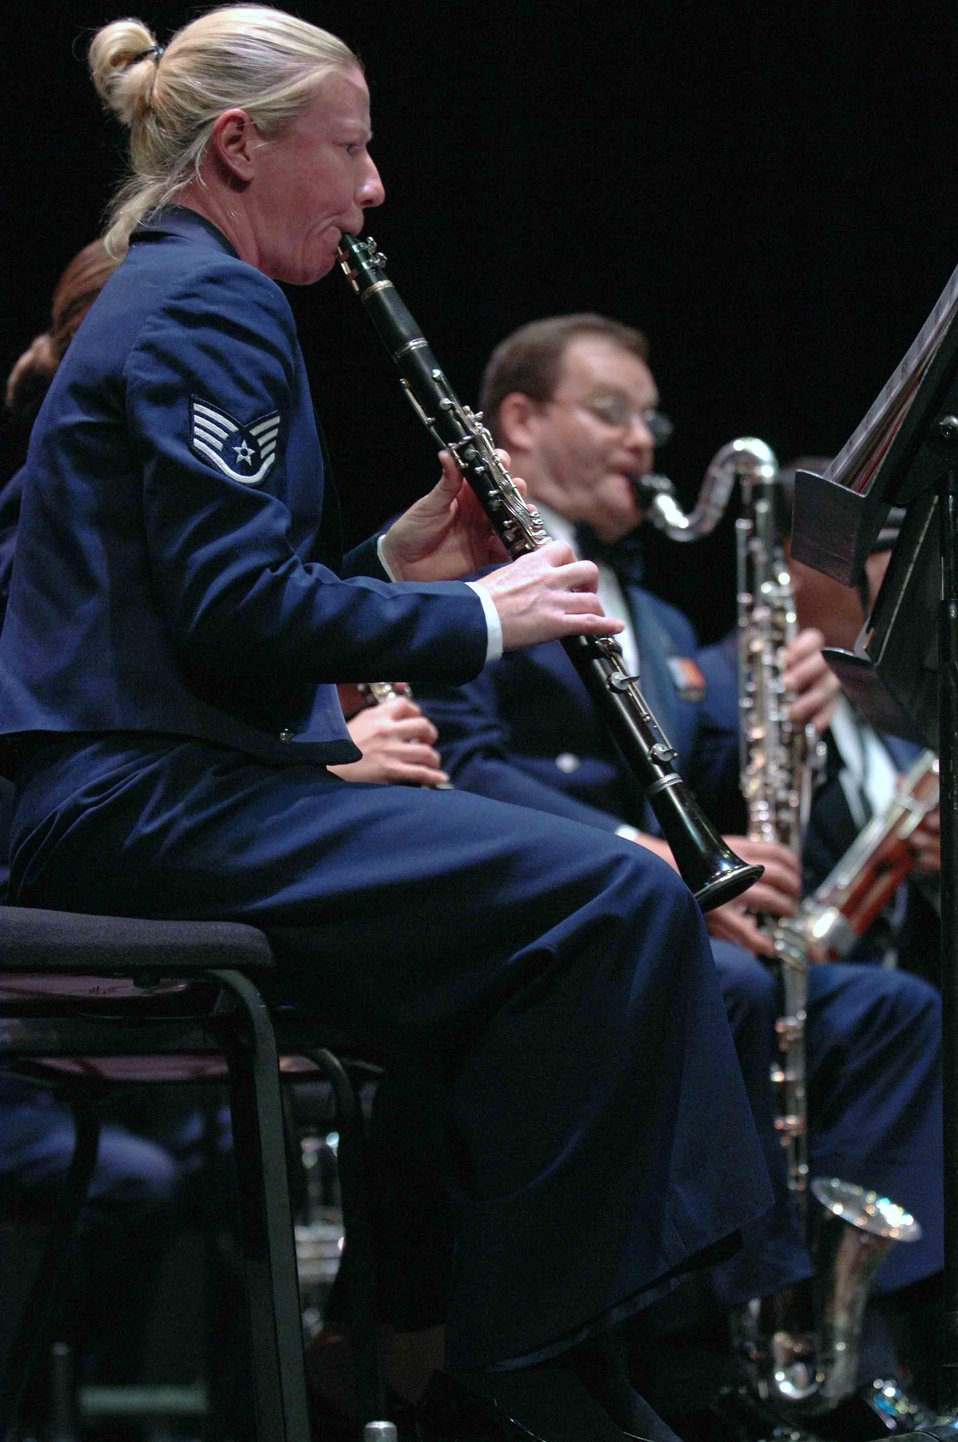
Music to their ears

Staff Sgt. Christy Bailes plays the clarinet during an Oct. 17 performance at the University of Nevada Las Vegas. Sergeant Bailes is a member of the United States Air Force Band of the Golden West. The Band of the Golden West, from Travis Air Force Base, Calif., is the only active duty Air Force band west of the Rocky Mountains. They are scheduled to perform five free concerts in the Las Vegas community. The band supports 10 active duty Air Force bases, five Air Force Reserve wings and five recruiting squadrons in California, Washington, Oregon, Idaho and Nevada with more than 500 annual performances.